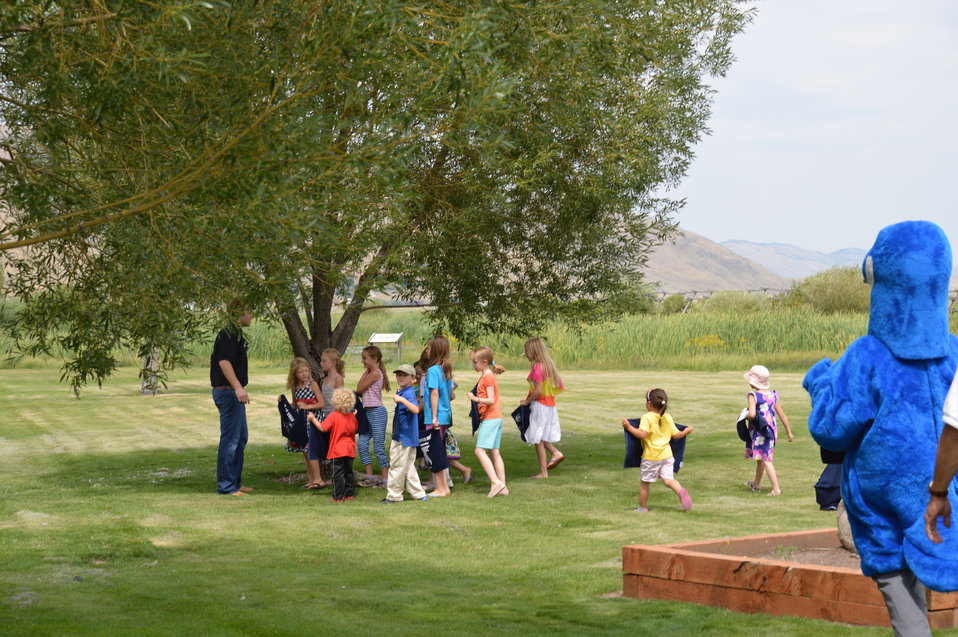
Get Your Goose On! - National Elk Refuge Style

On August 10, 2012 the U.S. Fish and Wildlife Service and Partners celebrated the 100 year anniversary of the establishment of the National Elk Refuge. In these photos, young attendees, along with Puddles the Blue Goose and the National Elk Refuge's mascot, showed us how to Get Your Goose On! with style.